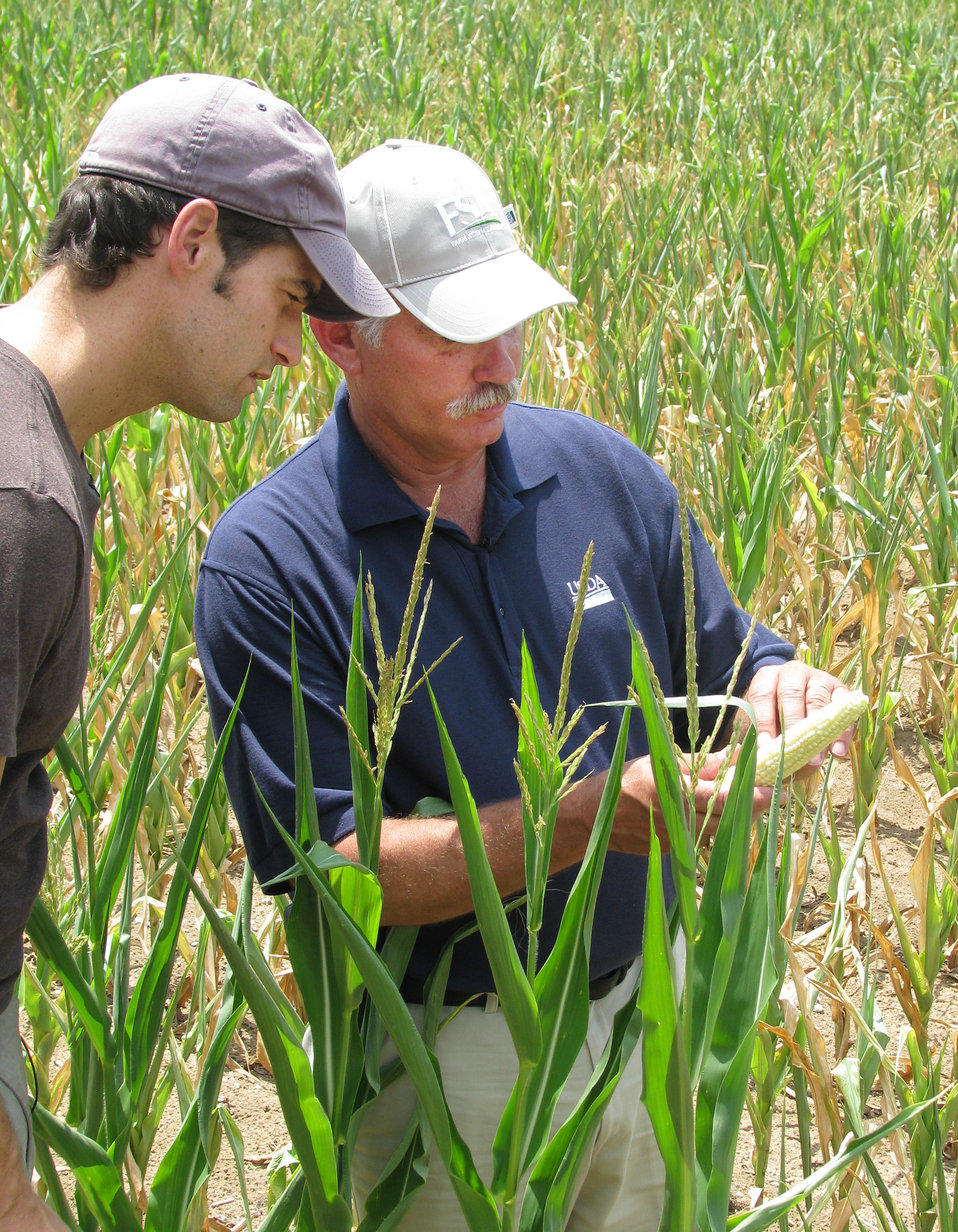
Agriculture Under Secretary for Farm and Foreign Agriculture Service (FFAS) Michael Scuse (right) explains the damage to a corn crop caused by drought conditions to a reporter in Idaville, White County, IN on Thursday, July 19, 2012. Agriculture Secretary Vilsack has instructed Agriculture subcabinet leaders to travel to affected drought areas to augment ongoing assistance from state-level U.S. Department of Agriculture (USDA) staff and provide guidance on USDA’s new, streamlined disaster process. The U.S. Drought Monitor currently reports that 61 percent of the continental United States is in a moderate to exceptional drought.